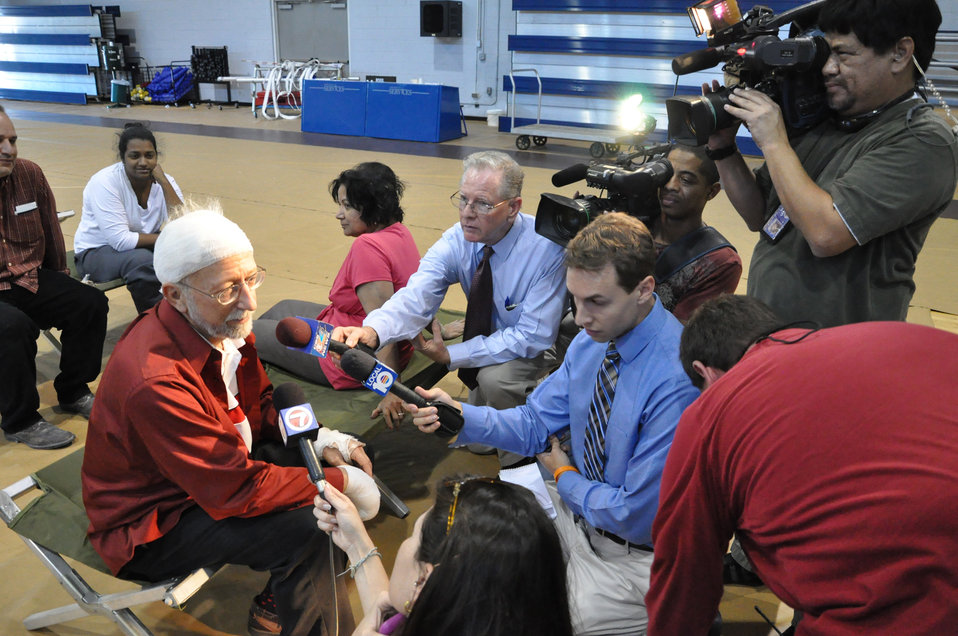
Homestead Air Reserve Base becomes hub for Haitian quake relief efforts

A firestorm of media descended upon Homestead Air Reserve Base after American citizens returned from Haiti aboard a C-130 Jan. 15, 2010. During a Customs and Border check, media documented the varied stories of survival.